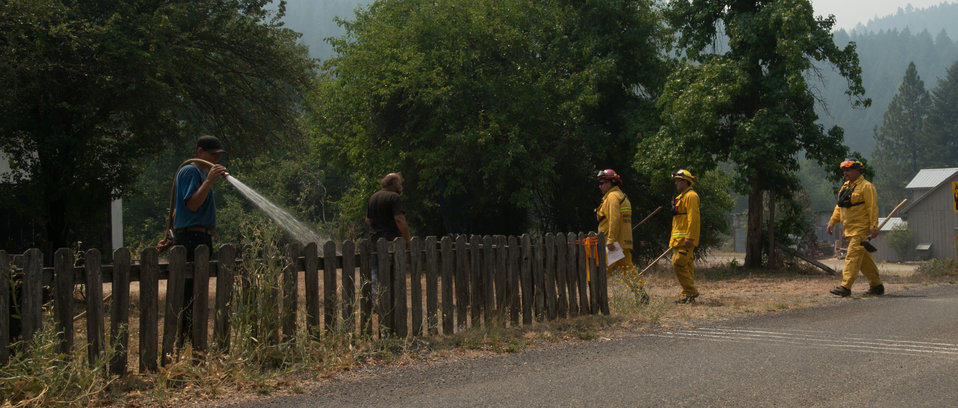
Fire fighters specializing both structural and wildland firefighting from Tahoe National Forest, Mt. Shasta-Trinity National Forest, South Yreka Fire Department, Dunsmuir-Castella Fire Department and others, have been called to the Salmon River Complex Fire, and conduct their structure-by-structure assessment of the urban intermix environment, at Sawyers Bar, CA in the Klamath National Forest, Tuesday, Aug. 6, 2013. The firefighters advise resident about fire prevention measures they are doing on their own as well as other measures they could take to prepare for fire. Actions such as moving away firewood, cutting and clearing plants next to their structures, and using garden hoses to soak structures and grounds all help in the event the main fire comes into their town.
There are two types structure environments in the realm of wildland firefighting.
This urban intermix structural protection environment is generally the more challenging, where structures have been built within a wildland area, isolated to some degree from other structures, but with no separation from wildland fuels (trees, brush and grass). This requires each structure to be assessed on a case-by-case basis. Fire protection measures will be tailored to each situation; defending these structures require a more complex solution, more firefighters, equipment and resources per structure.